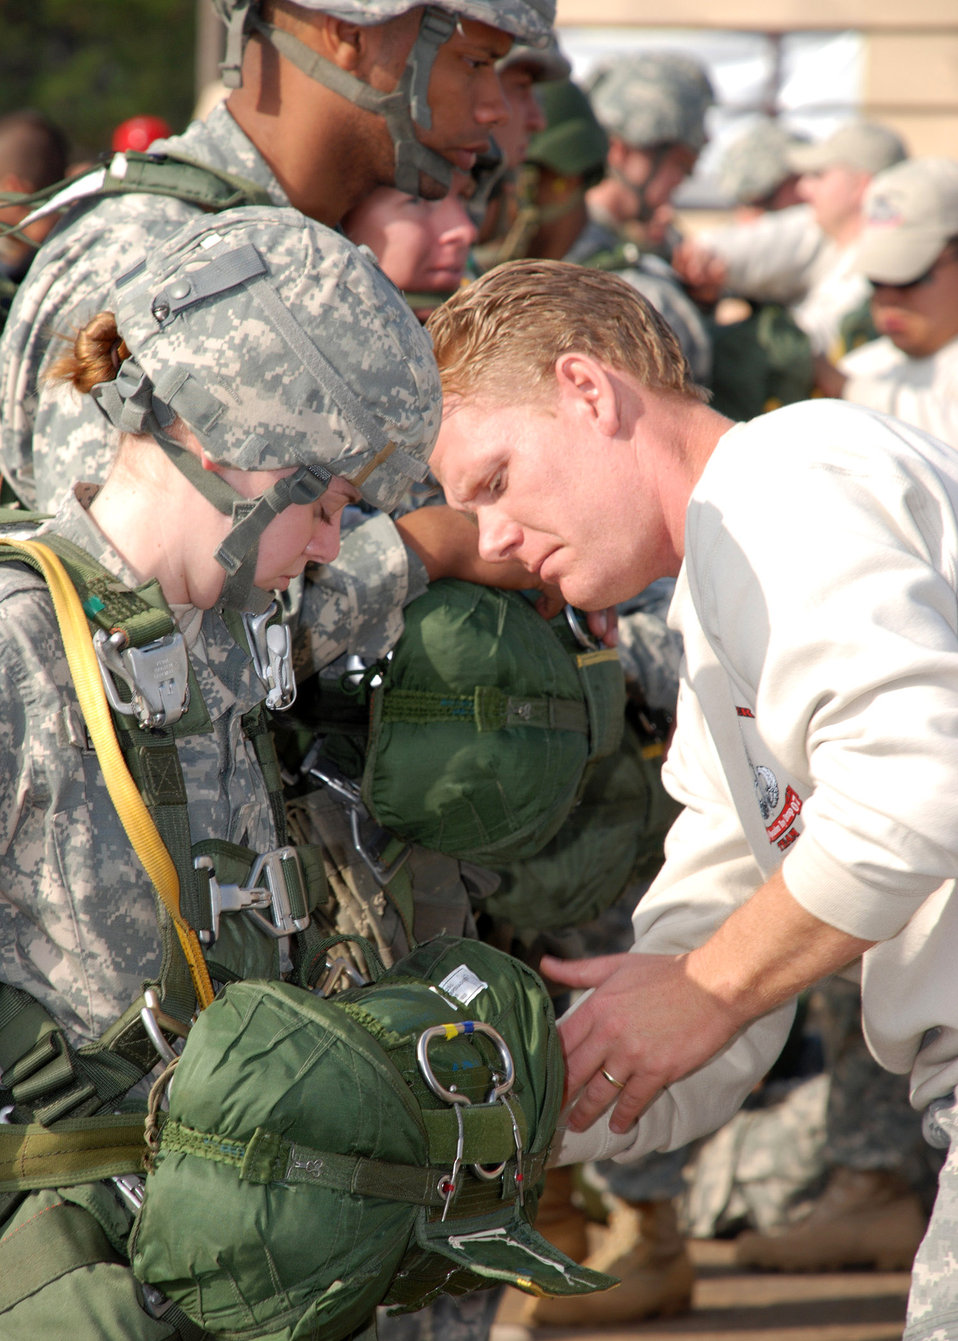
Operation Toy Drop brings international, U.S. military together

A jumpmaster checks a Soldier's parachute during Operation Toy Drop Dec. 8 at the Sicily Drop Zone at Fort Bragg, N.C. The exercise included jumpmasters from Canada, Chile, Ireland and Germany. The exercise brought together international, acitve duty, and Reserve military members.